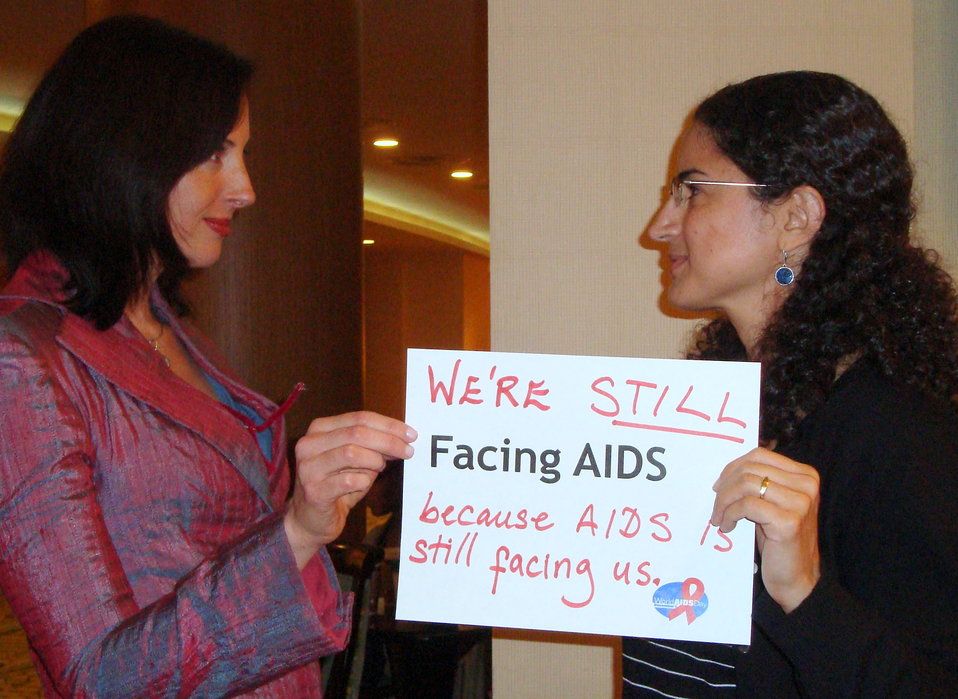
FacingAIDSCampaign 047